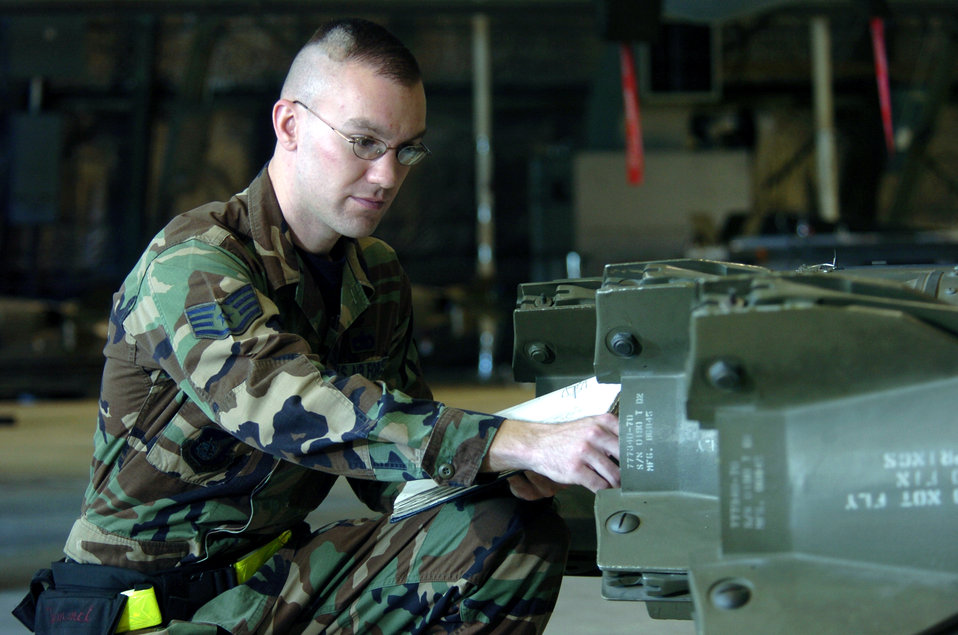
Don't bomb eval

OSAN AIR BASE, South Korea -- Staff Sgt. Jason Tremmel inspects a Mark-82 bomb during a quarterly proficiency evaluation here. The training is conducted to ensure Airmen meet safety and time requirements when loading weapons on aircraft. Sergeant Tremmel is a weapons loader with the 25th Aircraft Maintenance Unit.